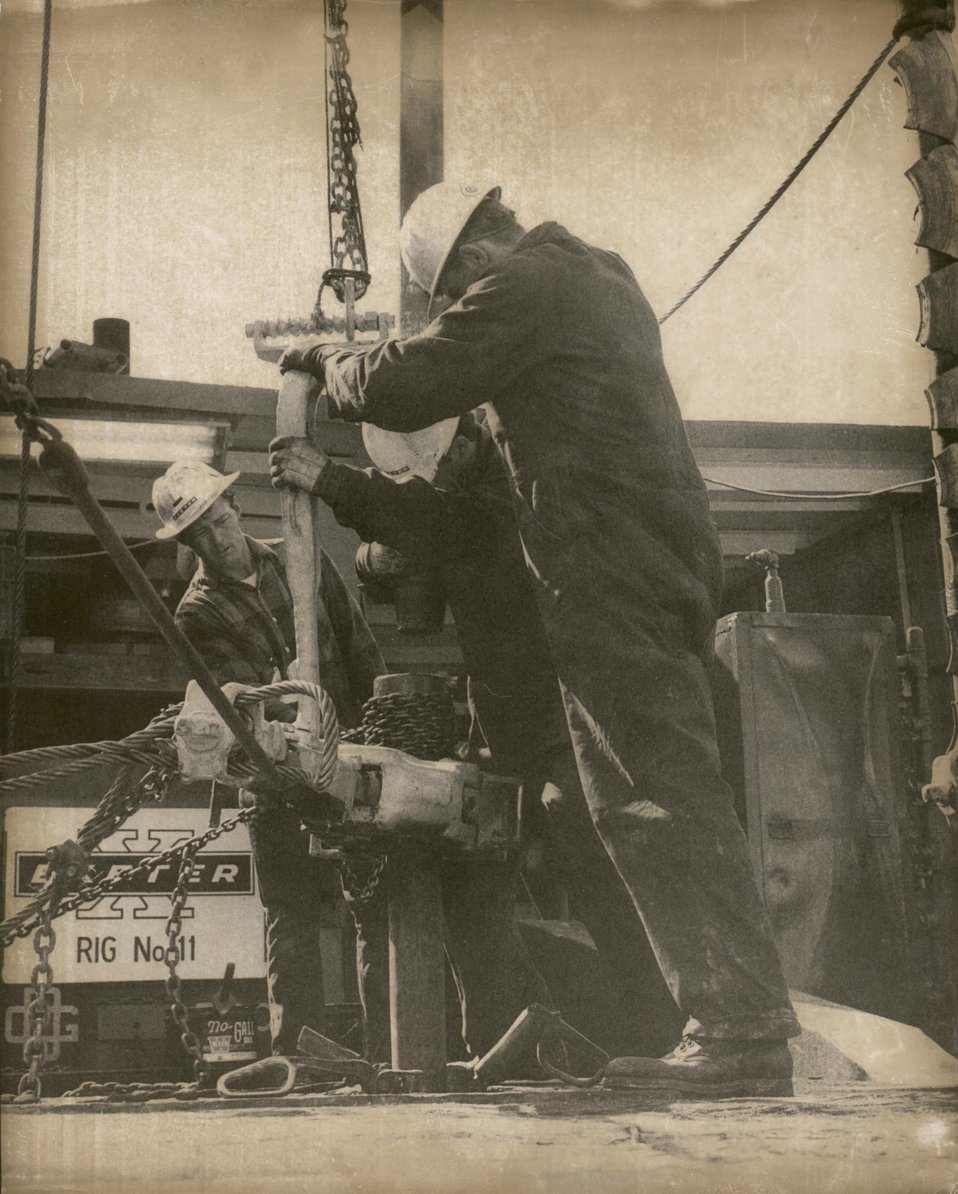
Drilling a well that eventually reached a depth of more than 7,000 feet under the Piceance Basin of northwest Colorado, Project Rio Blanco drillers had to stop from time to time to lengthen the drill stem by adding another section of pipe. Circa 1973.